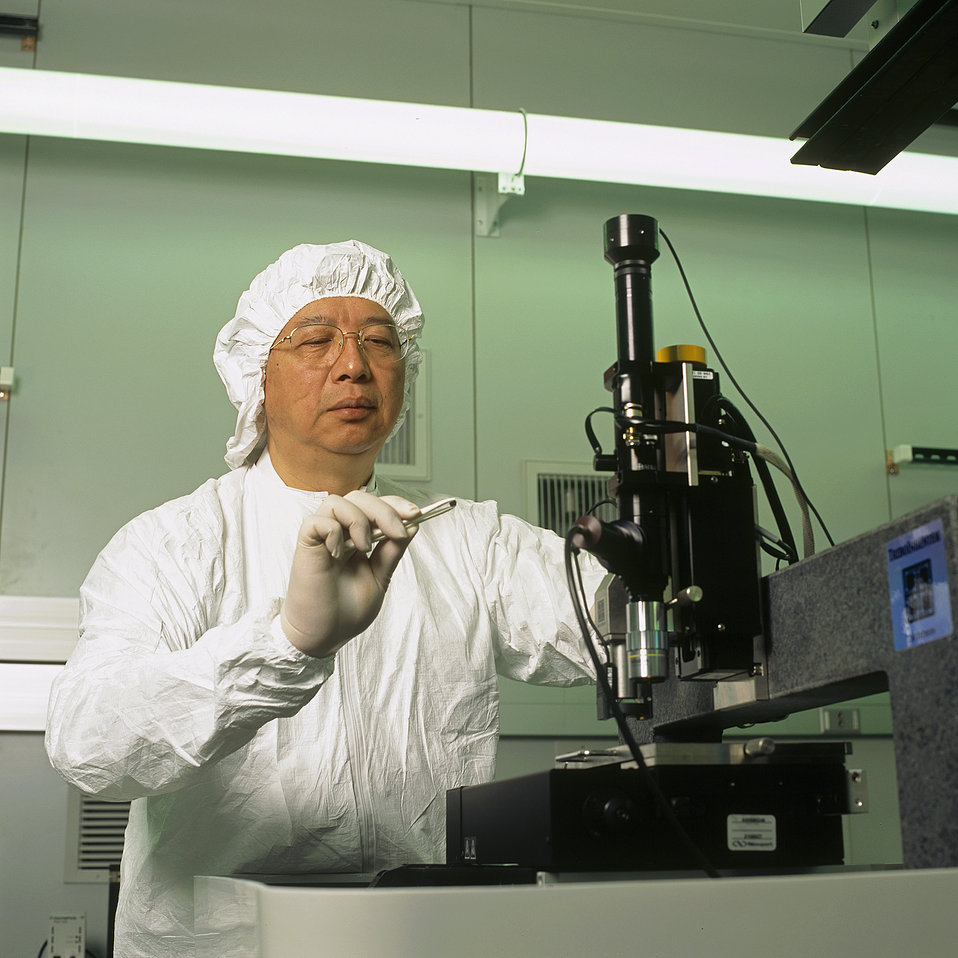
Nanotechnology; Materials; Nanofriction

The NIST Advanced Measurement Laboratory includes sophisticated low-vibration 'clean rooms.' Here, materials researcher Stephen Hsu prepares to measure nanoscale friction between a diamond tip and a silicon surface. Such measurements are needed for the design of nanosized gears and other devices that will become the nanomachinery of the future.